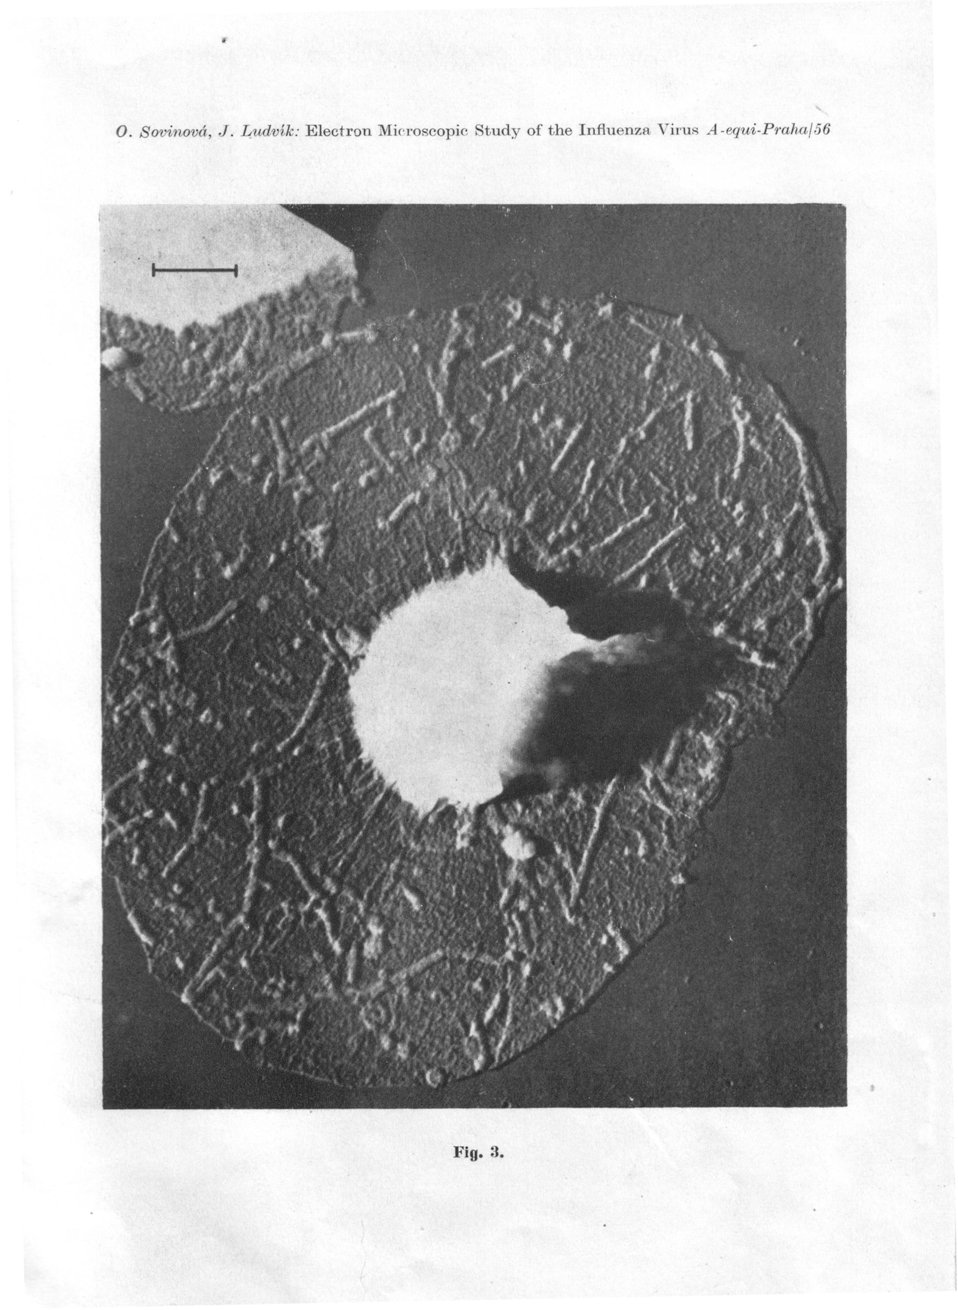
Čeština: Acta Virologica